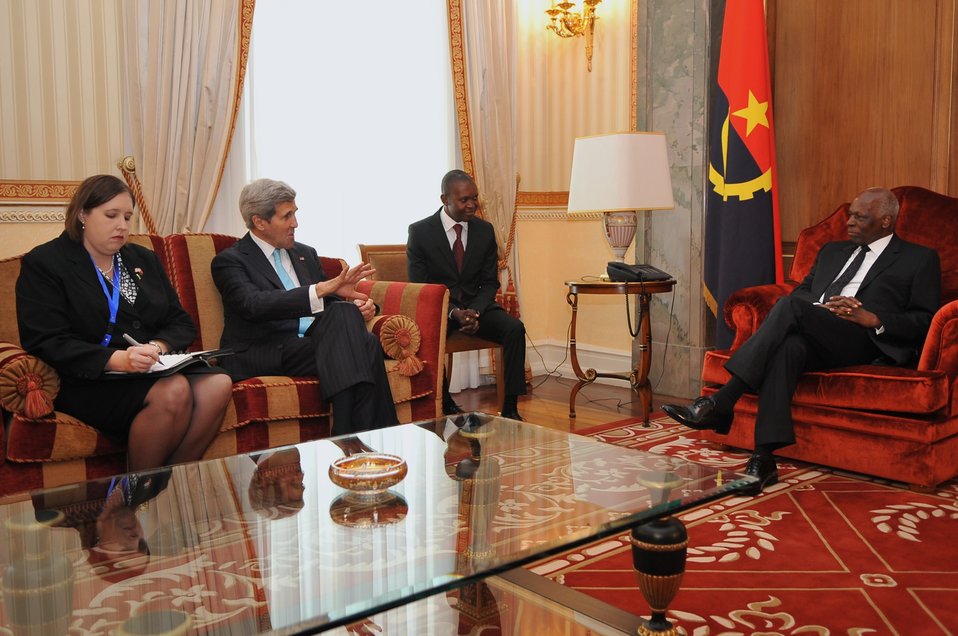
Secretary Kerry, Charge Merritt Meet With Angolan President dos Santos in Luanda

U.S. Secretary of State John Kerry, joined by Embassy Luanda Charge d’Affaires Heather Merritt, chats with Angolan President Jose Eduardo do Santos at the beginning of a bilateral meeting at the Presidential Palace in Luanda on May 5, 2014.